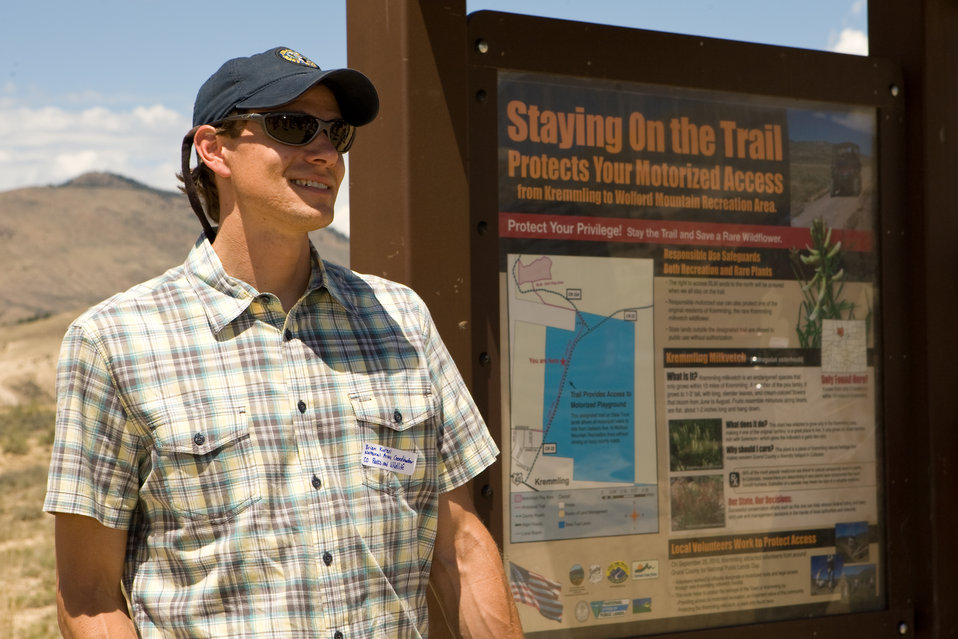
Natural Areas Program Kiosk in Kremmling

The Colorado Rare Plant Conservation Initiative (RPCI) is a partnership of 23 statewide and regional agencies, private organizations, and academic institutions working to conserve 121 rare plants in Colorado. As part of these efforts the group developed the Colorado Rare Plant Conservation Strategy, developed Best Management Practices to reduce energy development impacts, addressed climate change, and developed focused strategies for the conservation of individual species at eight priority landscapes. The group has also worked to coordinate volunteer efforts for plant conservation across the state.